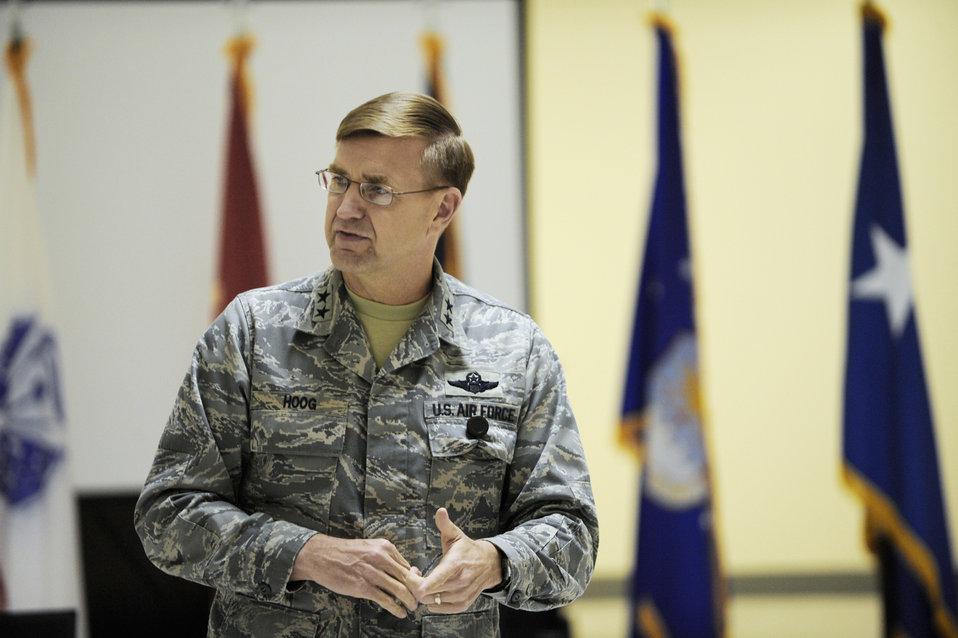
Operation Enduring Freedom

Maj. Gen. Stephen L. Hoog, speaks at the Theater Space Conference Feb. 8, 2010, at a base in Southwest Asia. General Hoog is deputy commander of both U.S. Air Forces Central Command and Combined Force Air Component commander and the vice commander of the 9th Air Expeditionary Task Force.